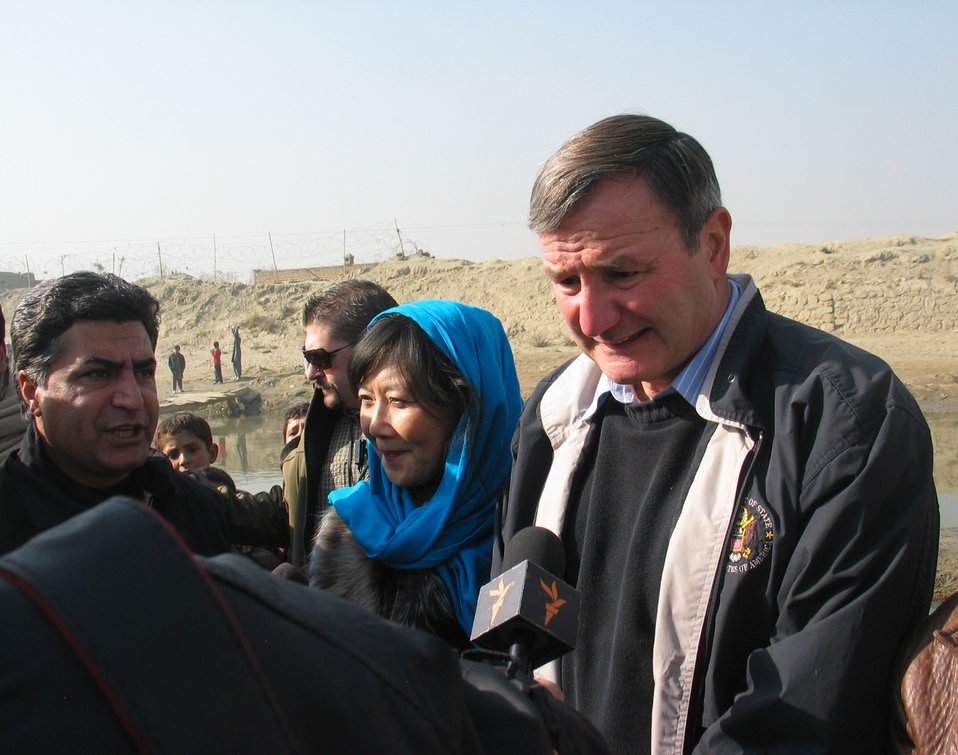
Kabul River Bridge Renovation, December 3, 2010